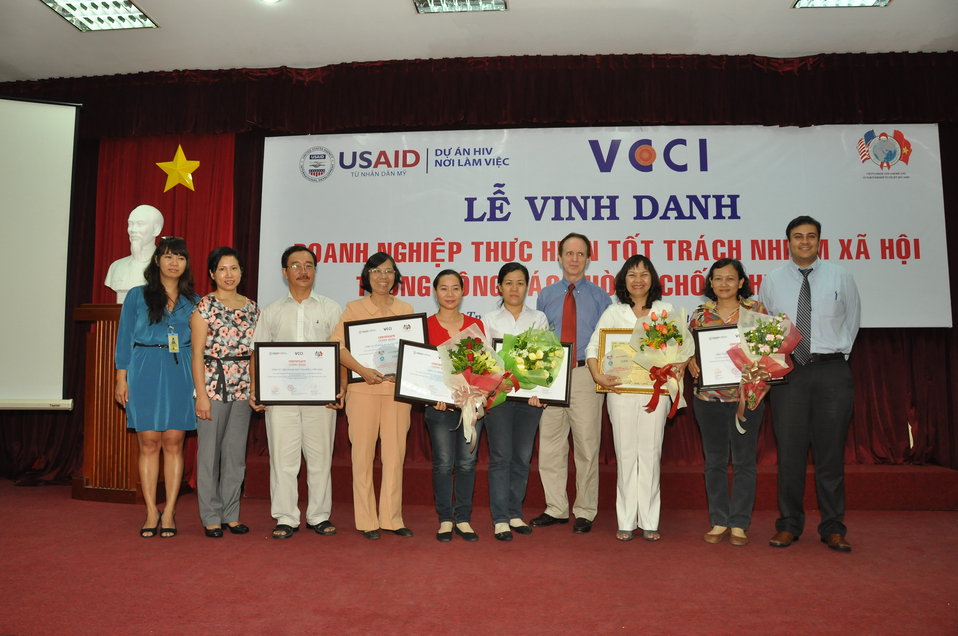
USAID and VCCI present certificates to enterprises active in HIV awareness and support

Award ceremony in Ho Chi Minh City on November 16, 2011